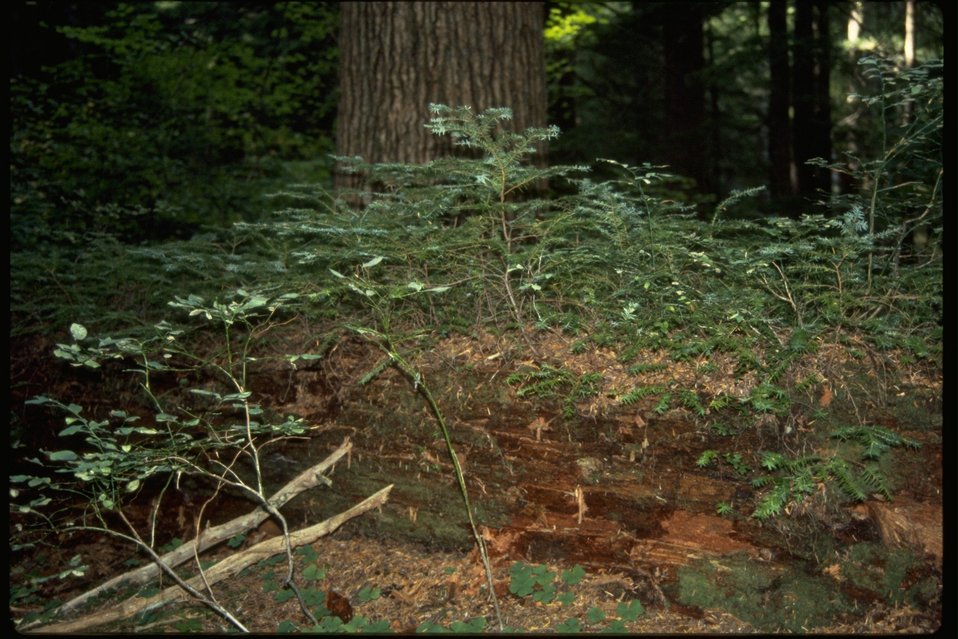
Nurse log, with vegetation growing on the top.